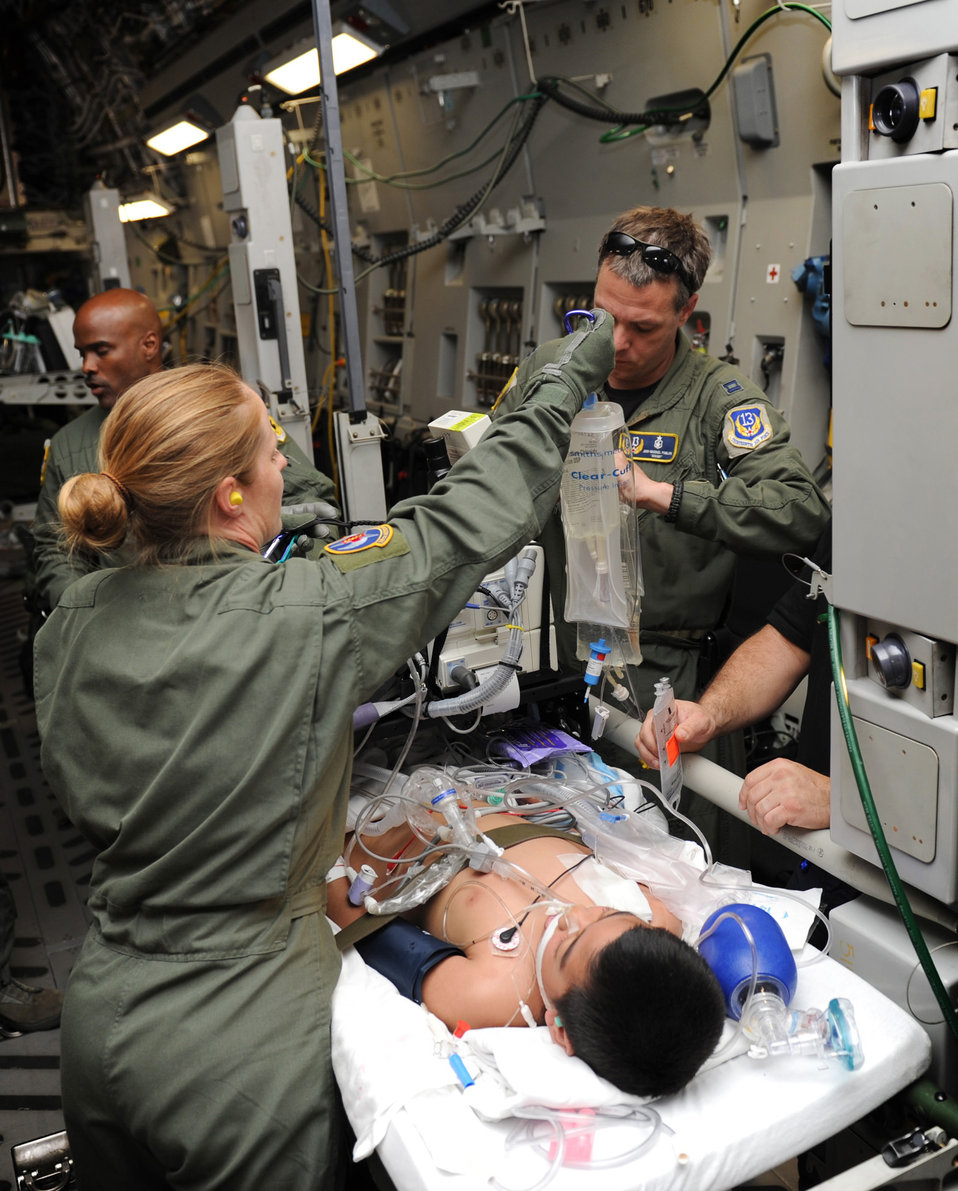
Airmen saving lives

Master Sgt. Molly Quentin and Capt. John-Michael Fowler care for a critically ill patient May 22, 2011, during a medical evacuation mission from American Samoa, to Tripler Army Medical Center, Hawaii. Sergeant Quentin is an aeromedical evacuation technician. Captain Fowler is a critical care air transport nurse.